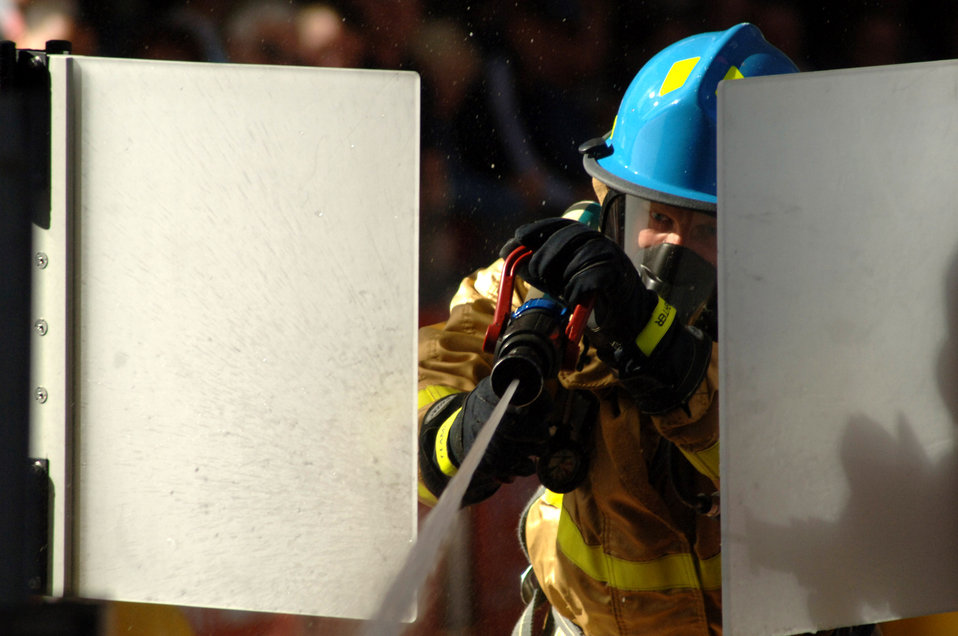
World Firefighter Combat Challenge

Air Force Academy firefighter Hans Barkley uses a firehose stream to hit a target just as he's through the target doors on a hydrant run event during the World Firefighter Combat Challenge XVI in Las Vegas. Every second counts in the timed events, which simulate the tasks a firefighter faces during a building fire.